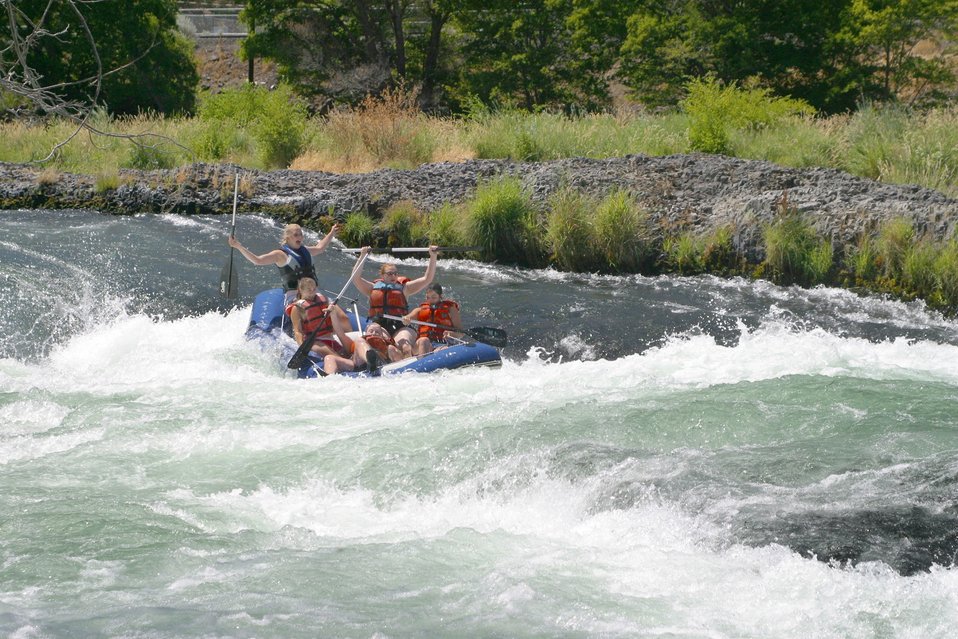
Oak Springs is a Class IV Rapids. The left channel has shallow rocks, large standing waves, turbulent currents and a large hole during high flows. The right channel has a large hole, shallow rocks, and turbulent currents. 7/26/03 Pelton Dam 3600 cfs: Moody Rapids 4300 cfs.